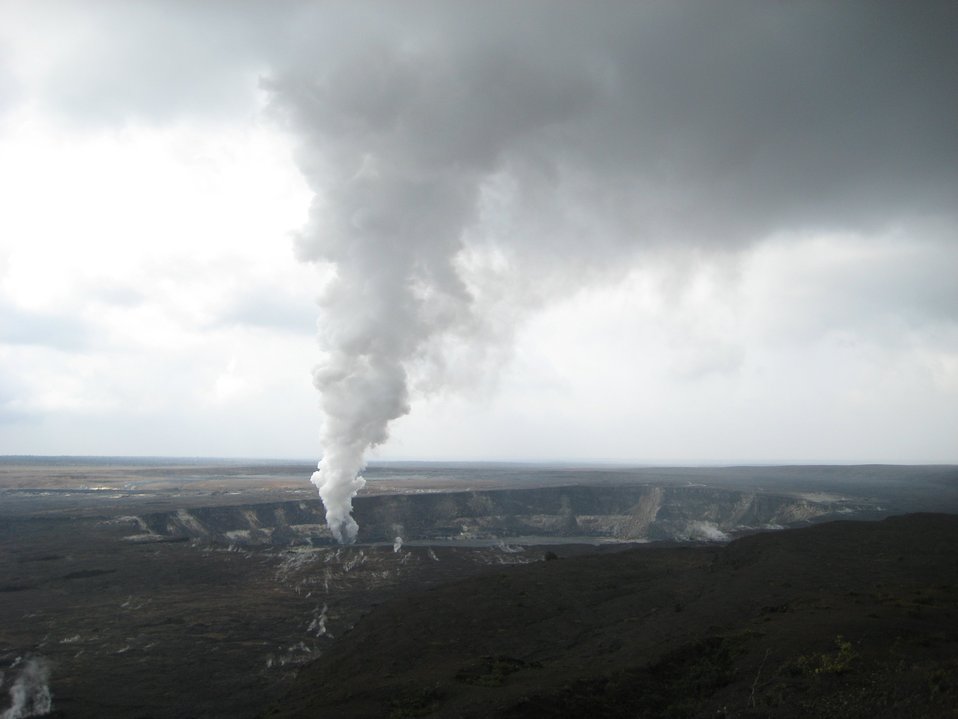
Halemaumau Crater within Kilauea Caldera at Hawaii Volcanoes National Park.